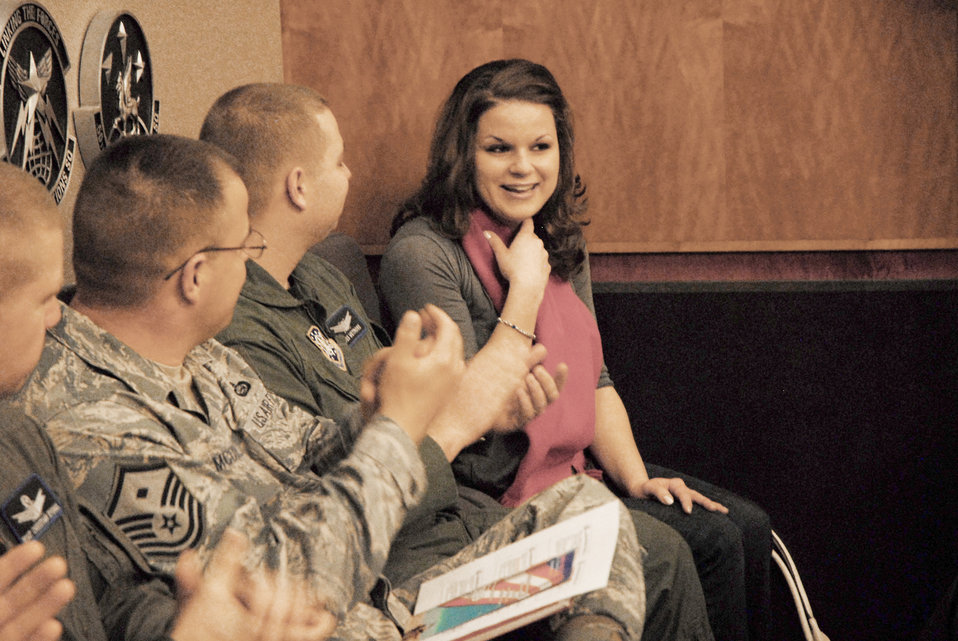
Schriever spouse wins short story contest

Erin Wetmore reacts to the surprise news that she had won the Year of the Air Force Family